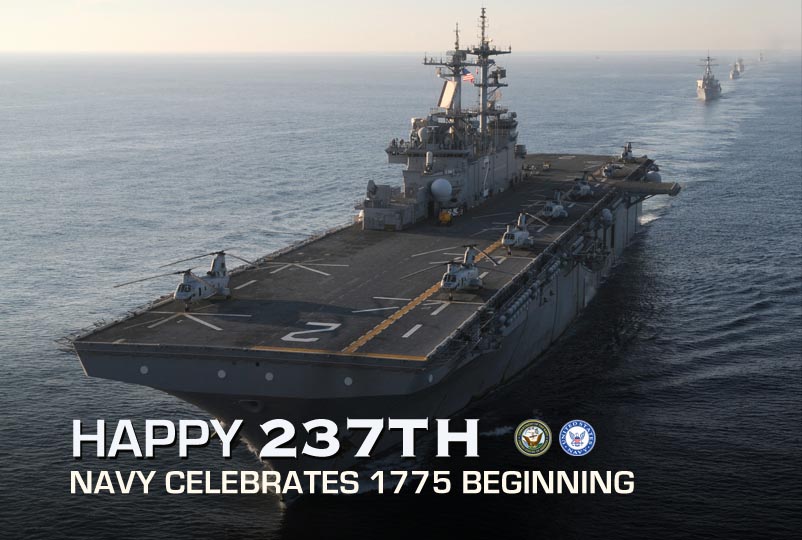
Navy Birthday